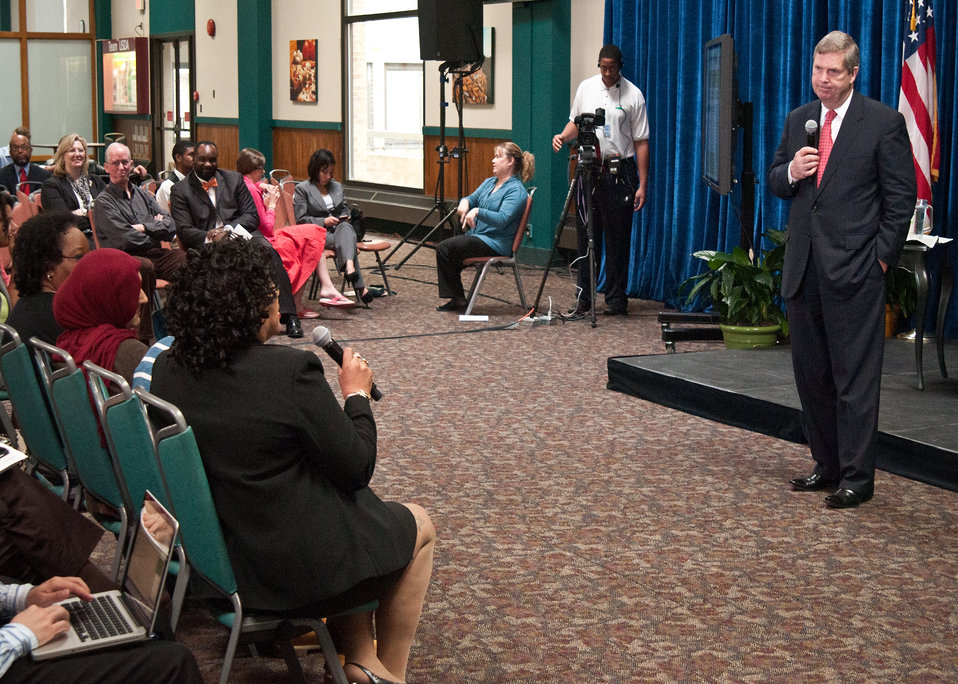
Agriculture Secretary Tom Vilsack listens to questions posed by employees during the Ask The Secretary event held in the South Building Cafeteria, in Washington, D.C., on Wednesday, March 21, 2012, gave the opportunity for USDA employees the ask questions about the Blueprint for Stronger Service Initiative and hear directly from Secretary Vilsack. This forum encouraged USDA employees to offer their ideas, voice their concerns, and gather more information on the discussions that are taking place within the USDA Administrative Solutions Project. The Blueprint for Stronger Service Initiative aims to build a modern and efficient service organization that is closely timed with technological innovations - and better suited to respond to 21st century agricultural challenges.